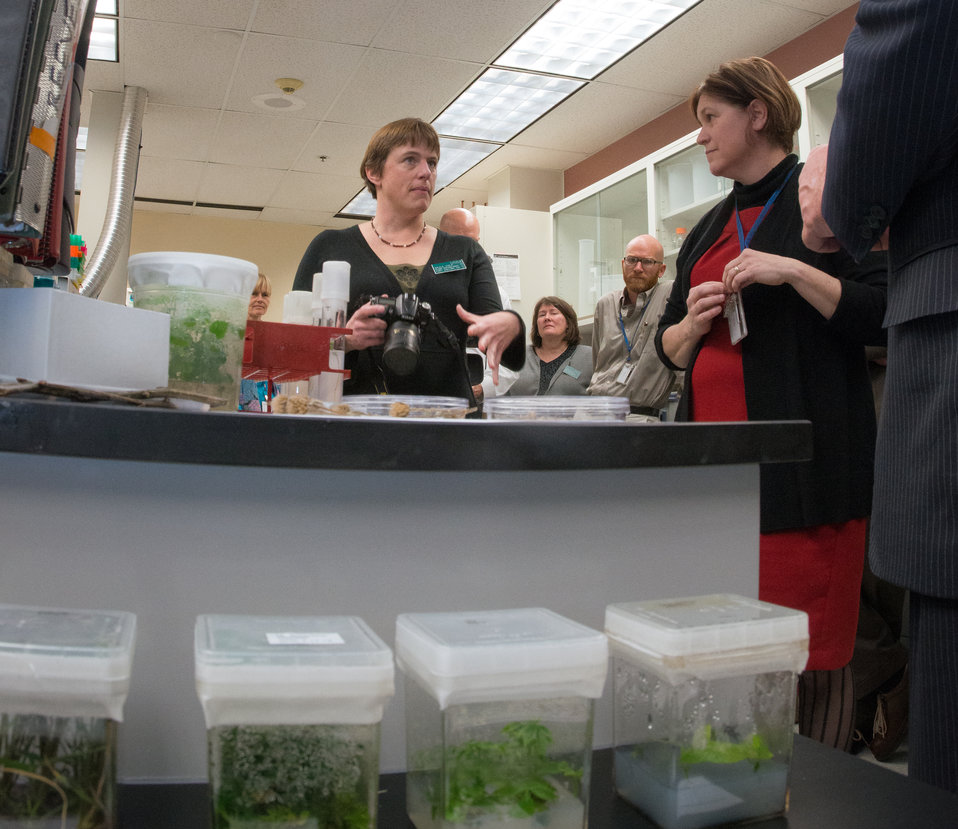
U.S. Department of Agriculture (USDA), Agriculture Research Service (ARS), National Center for Genetic Resources Preservation (NCGRP), Plant Germplasm Preservation Research Unit (PGPRU) Research Leader, Research Plant Physiologist Dr. Gayle Volk explains the research that is being conducted, in Ft. Collins, CO, on Wednesday, Nov. 6, 2013.